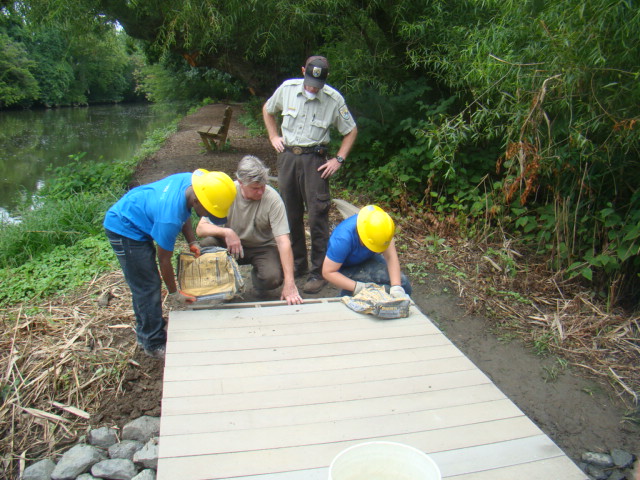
Building a boardwalk

U.S. Fish and Wildlife Service